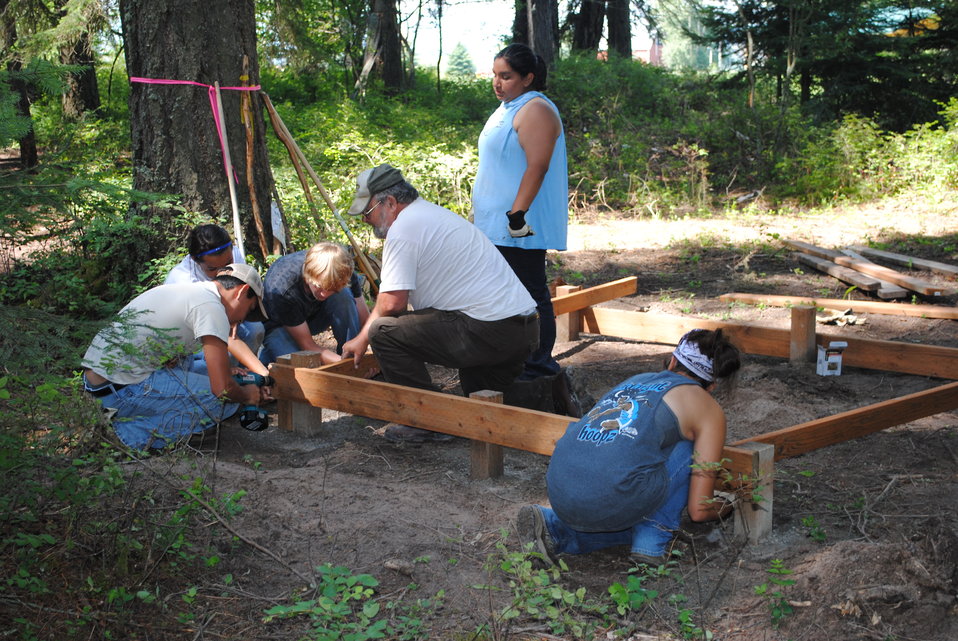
Creston National Fish Hatchery Outdoor Classroom Project

Montana Tribal Youth Conservation Corps
Nature Explore Outdoor Classroom Project

Dave Bermal (construction supervisor) gives advice to YCC group.

Evie Bradley/USFWS